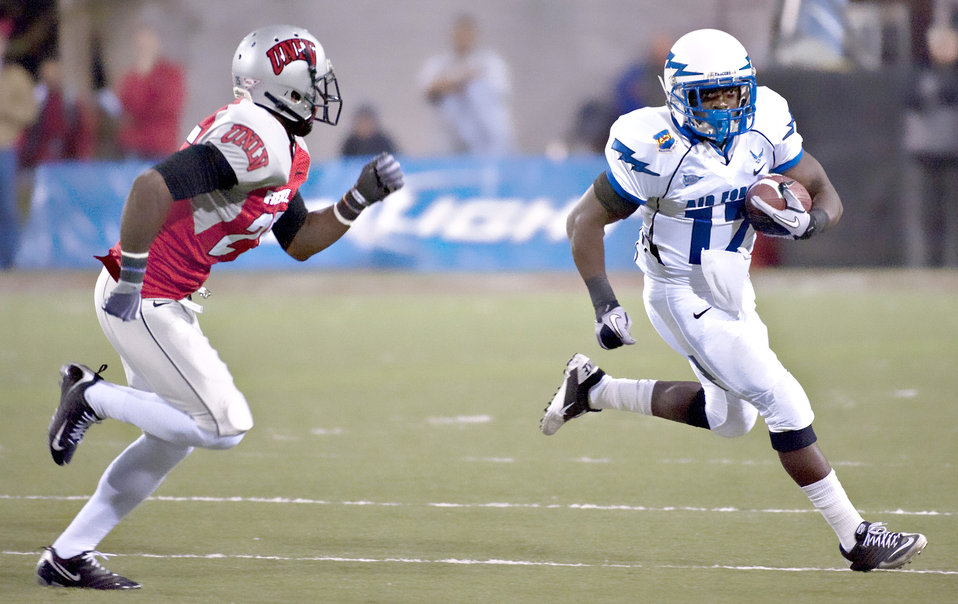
USAFA vs UNLV

Air Force running back Asher Clark runs left during the Falcons' match against the University of Nevada, Las Vegas Nov. 18, 2010, in Las Vegas. Clark had 14 rushes and 82 yards, which puts him over 1,000 yards for the season. The Falcons defeated the Rebels 35-20 in their final regular-season game, improving their record to 8-4.